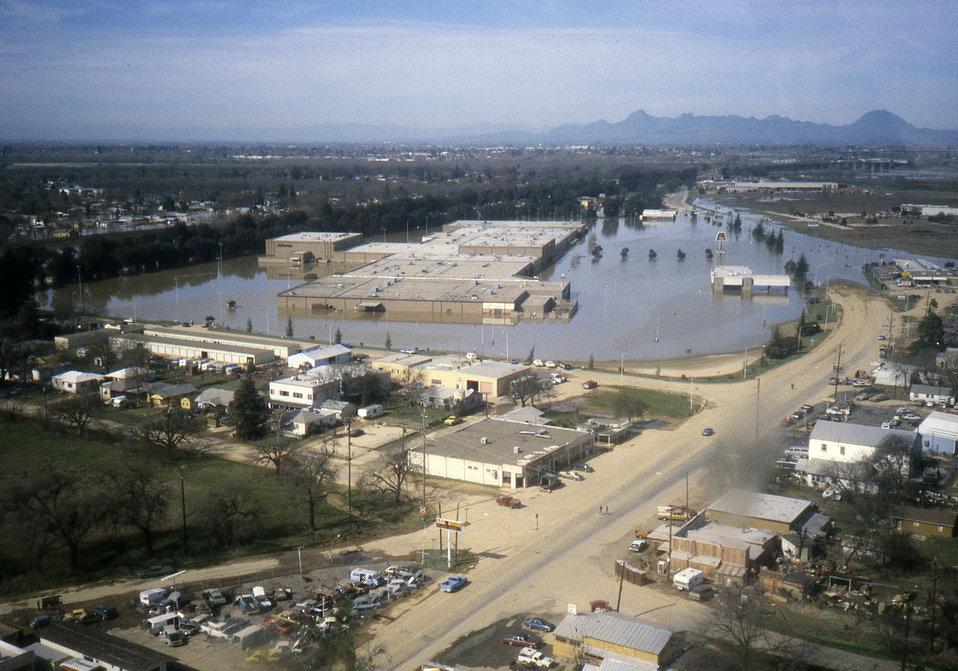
Linda flooding 1986

A flooded mall in Linda, Calif., shown in February 1986